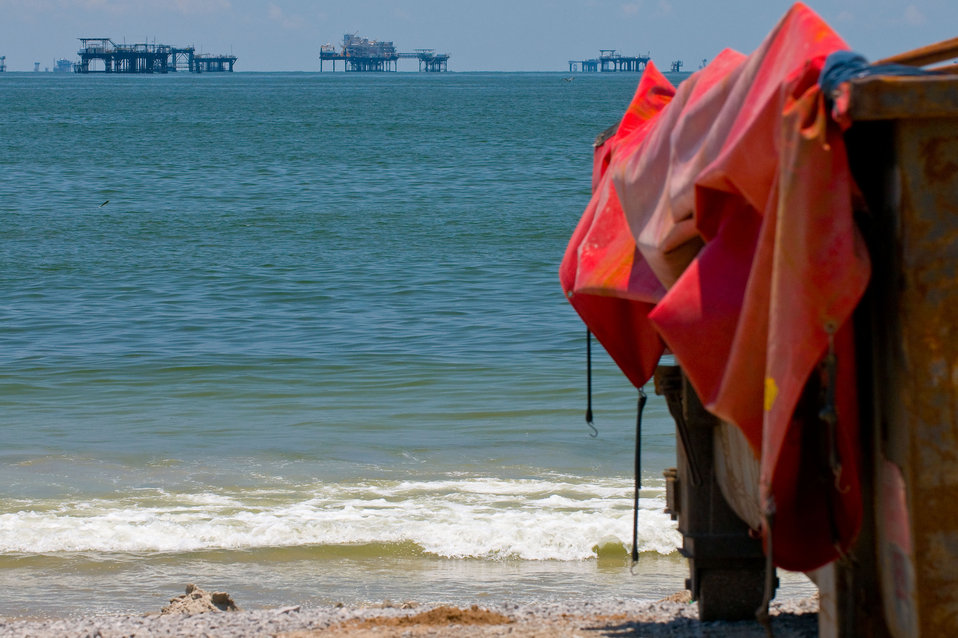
June 1, Unintended consequences

Oil production platforms and disposal dumpster for oiled waste. Lafourche, La.